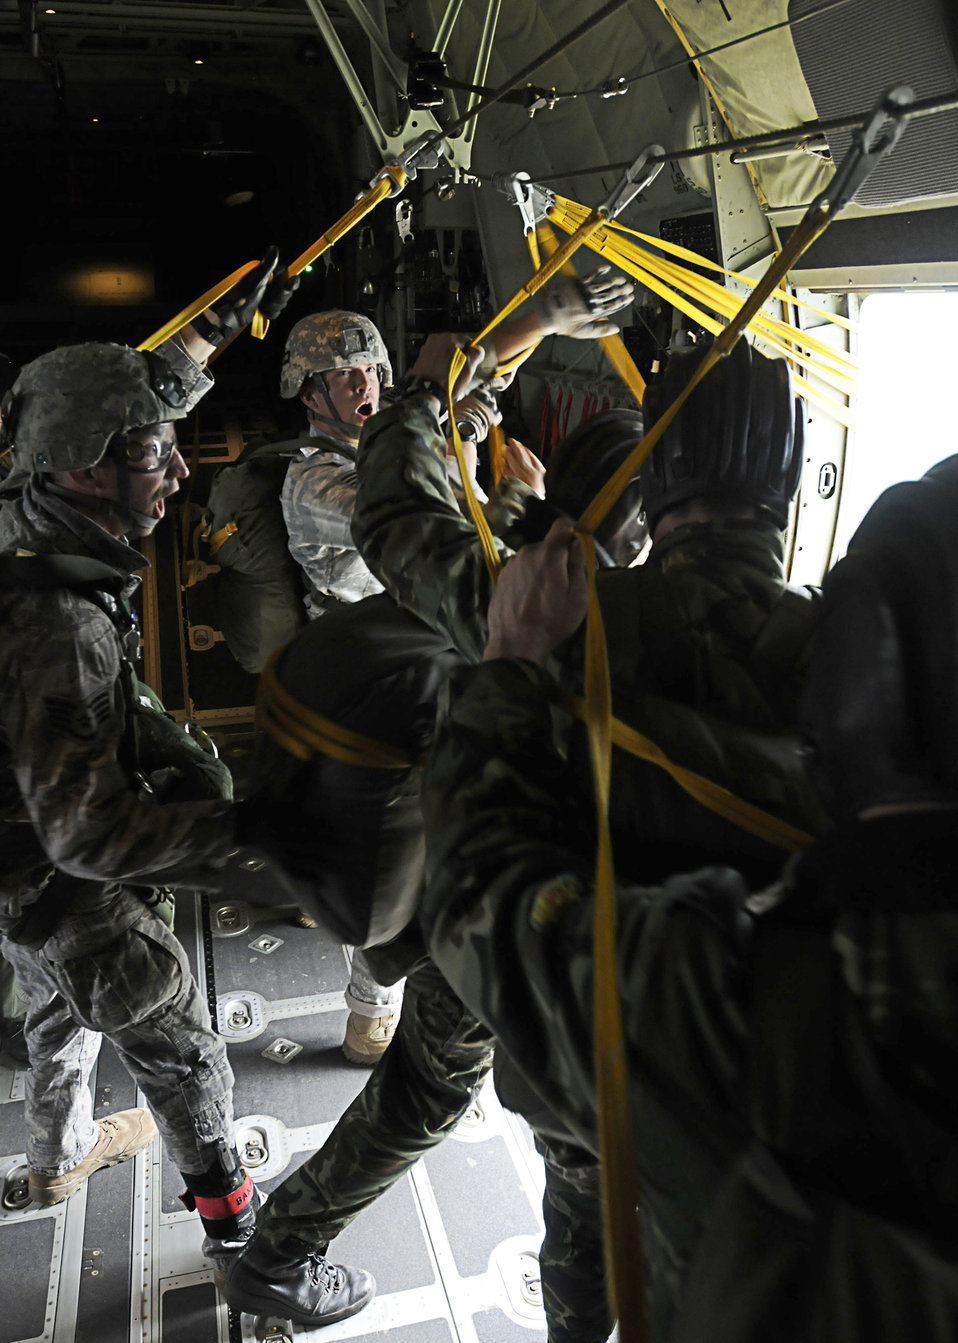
Thracian Spring 2011

Bulgarian air force paratroopers jump from a C-130J Super Hercules under the direction of staff sergeants. Stephen Baker and Nickolas Hurst during a joint static-line jump April 29, 2011, in support of Thracian Spring 2011 in Plovdiv, Bulgaria. Both sergeants are assigned to the 435th Security Forces Squadron.